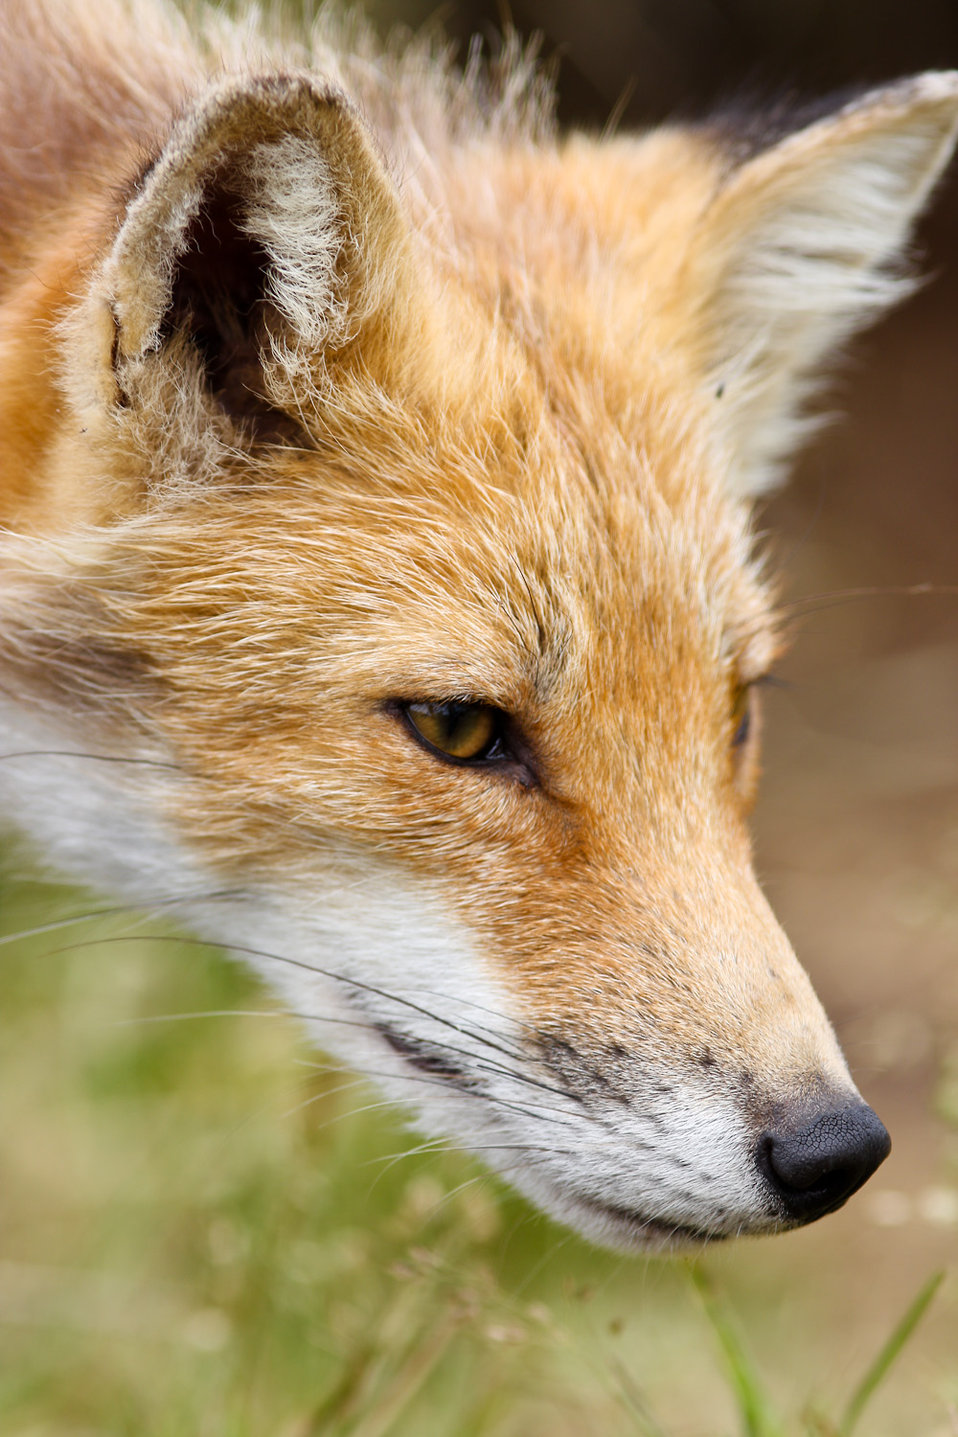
Red Fox

Lisa Hupp/USFWS